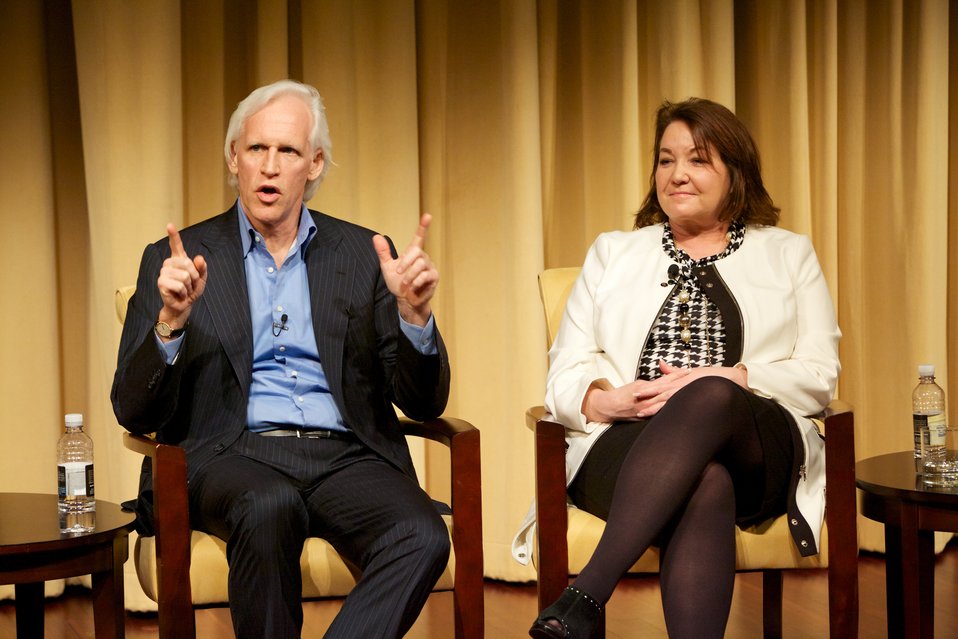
The Monuments Men; Robert M. Edsel (left), author, and Nancy H. Yeide (right), Head of the Department of Curatorial Records at the National Gallery of Art